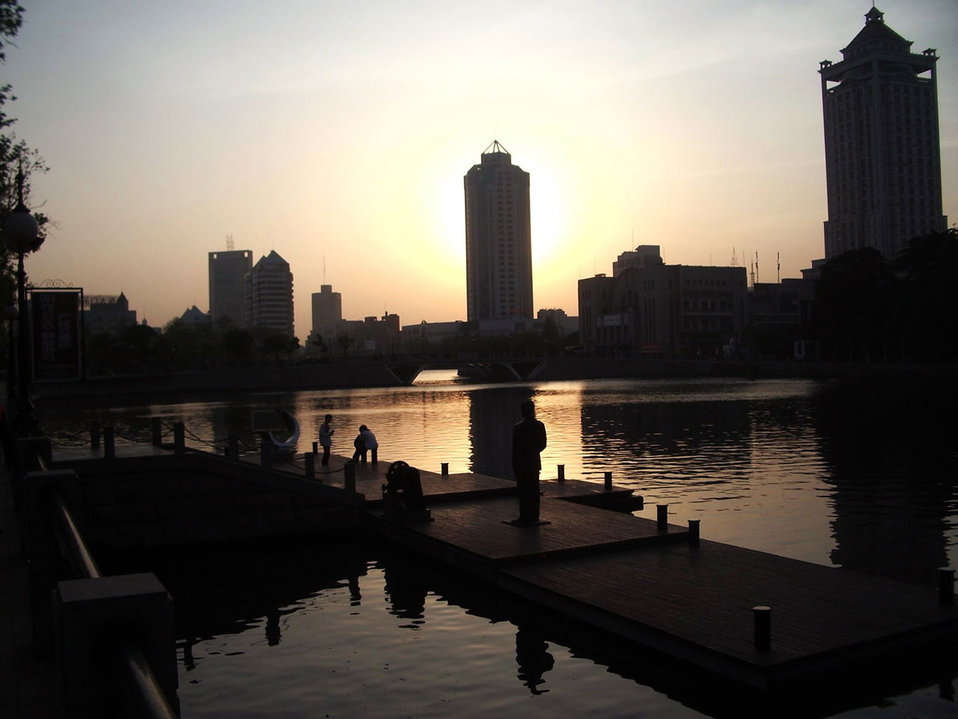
Twilight

Nantong china at dusk.